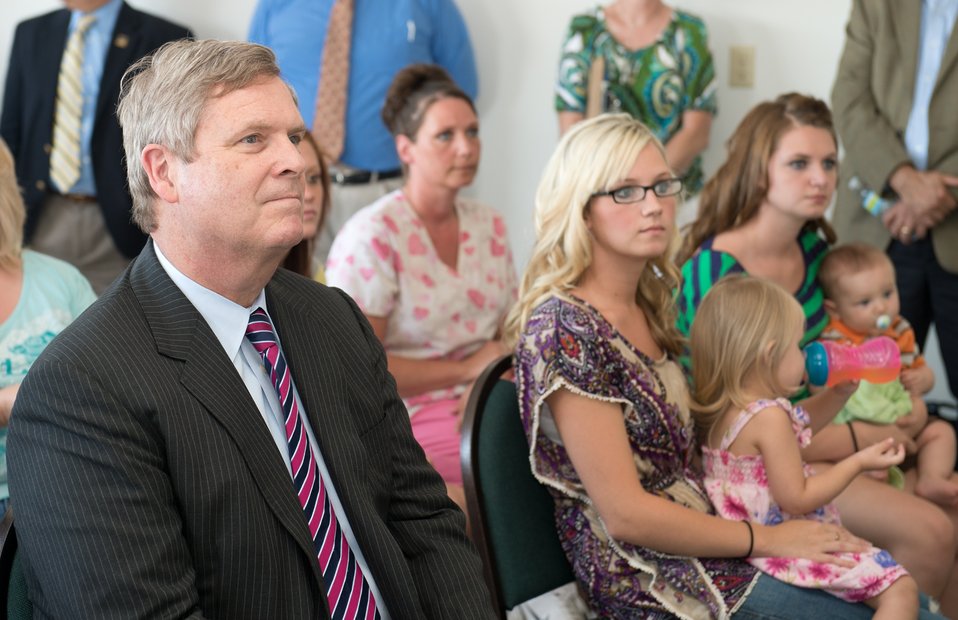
Agriculture Secretary Tom Vilsack (left) listens as Arbor Village community members share home ownership success stories during Secretary Vilsack’s visit for commemoration of National Homeownership Month in Fayette County, OH on Thursday, June 28, 2012. (Next to the Secretary left-to-right Arbor Village resident Jacquie Noel and her children, Alandriah and Ryker Noel, and Jacquie’s sister Kristen McRobie)